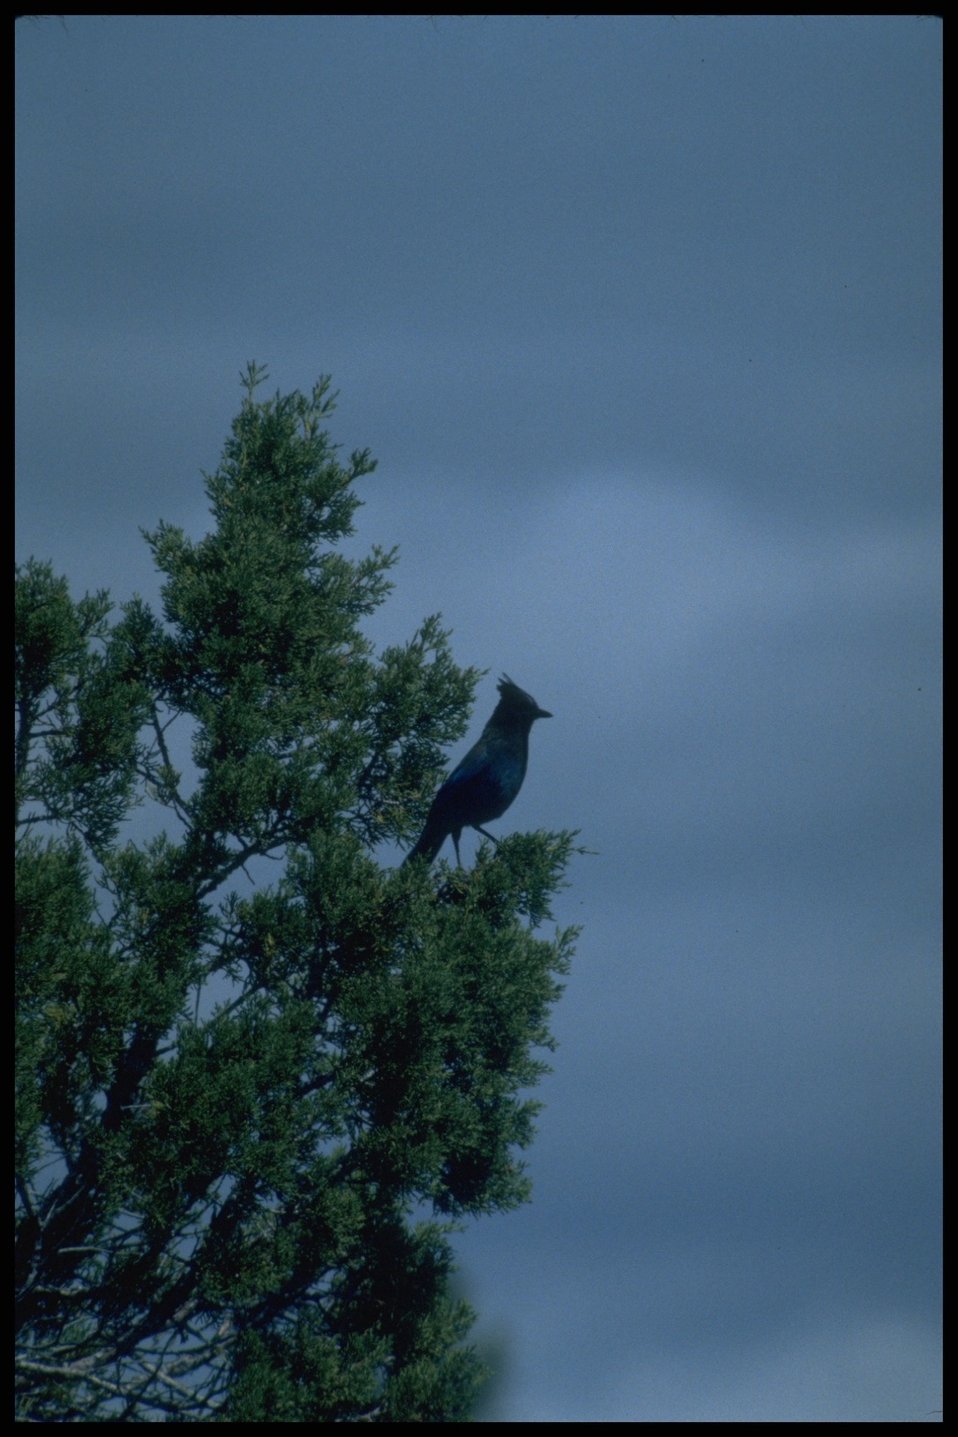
Jay perched on tree limb, Lakeview District.